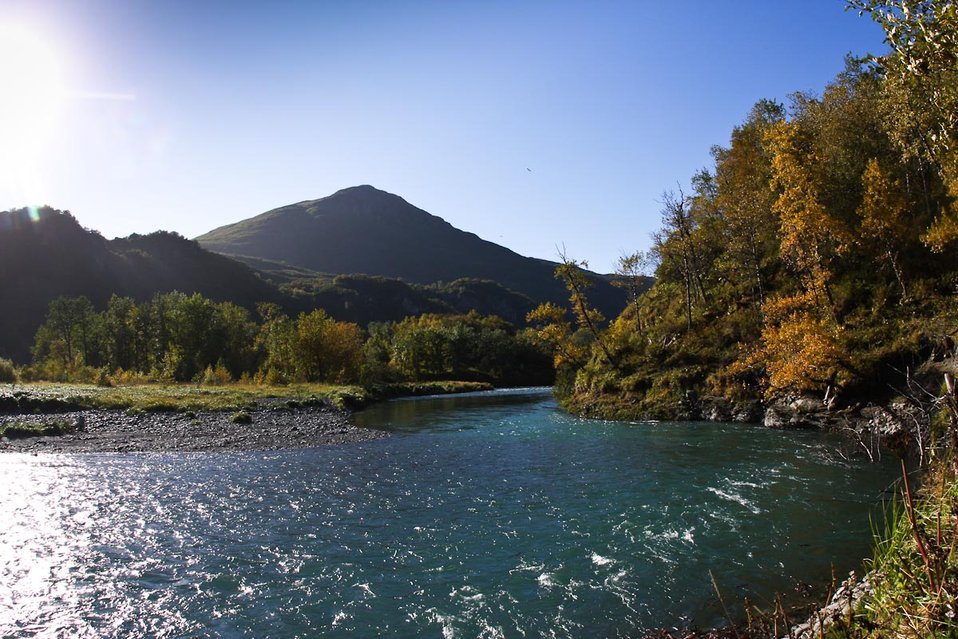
Uganik River in fall

Lisa Hupp/USFWS
Source: Kodiak NWR